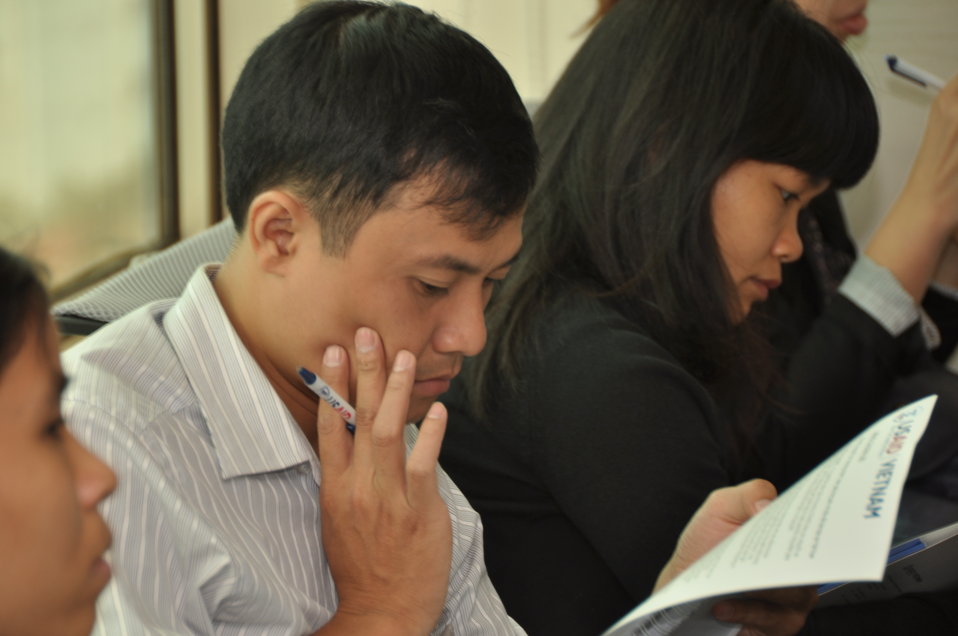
Journalists learn about new USAID climate change awards.

October 17, 2012